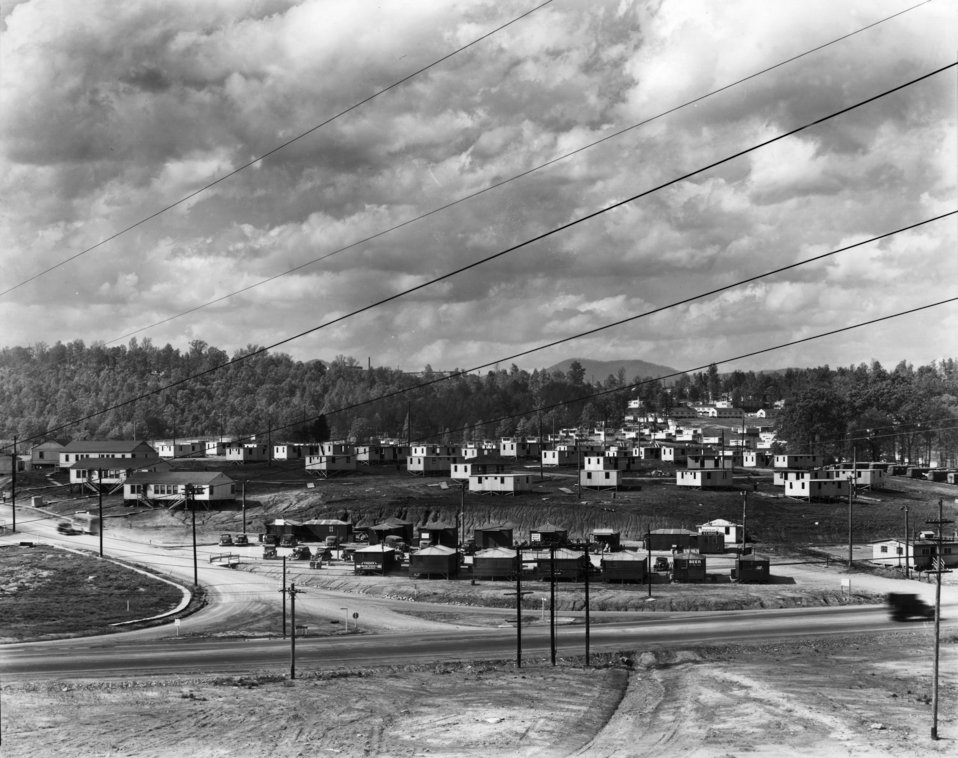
Illinois Avenue and Oak Ridge Turnpike Shopping Area Oak Ridge

MED 47 DOE photo by Ed Waestcott 1944 Oak Ridge Tennessee